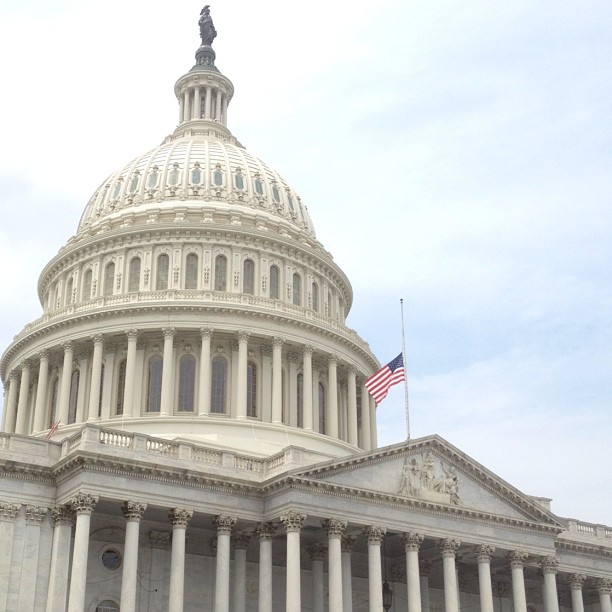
Flag at half-staff at the Capitol as mark of respect for victims in Oak Creek, Wisconsin.